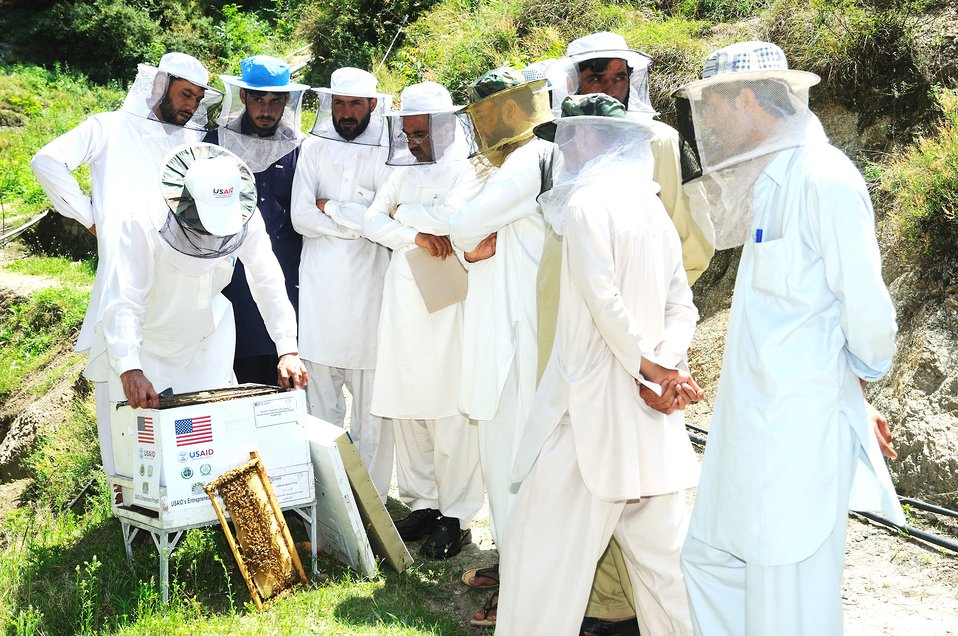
Creating opportunities

Swat, May 22, 2012 - Economic opportunities for more than 1,060 beekeepers have been created in the USAID's Entrepreneurs value chain program and livelihoods rehabilitation project in Swat